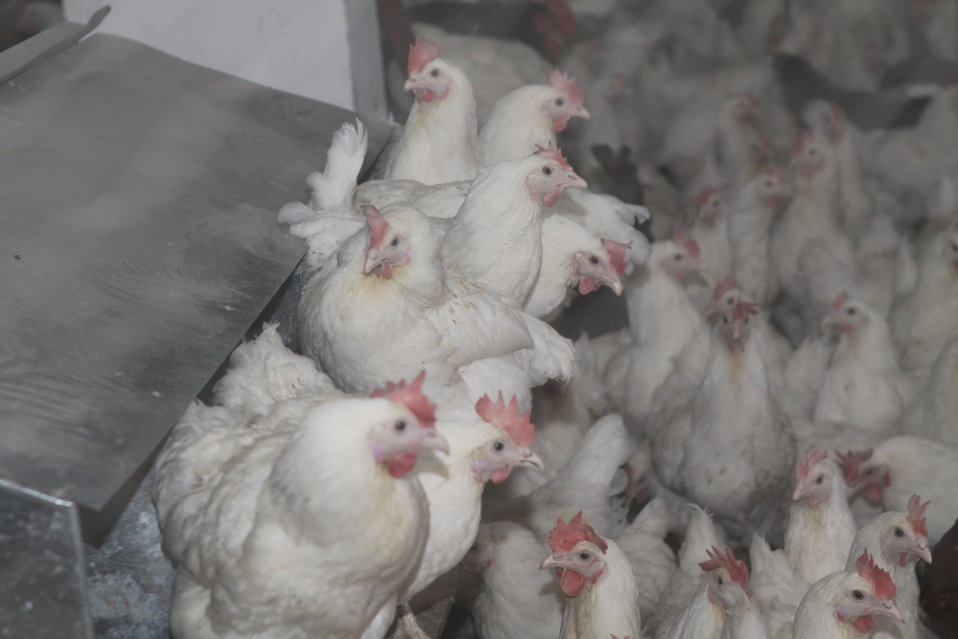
Bolan Poultry Farm